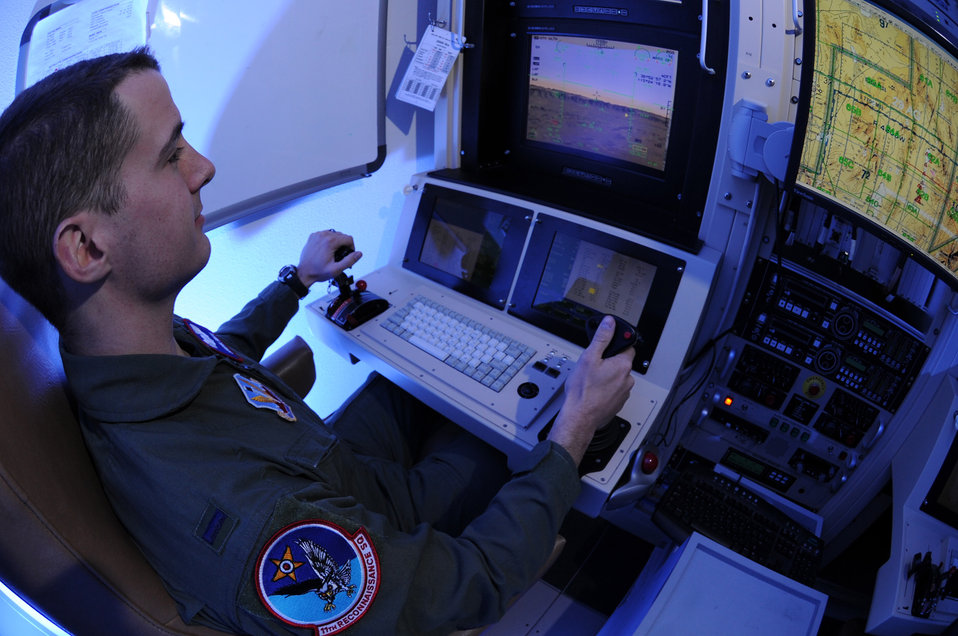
Training for unmanned aircraft systems

1st Lt. Jorden Smith operates an MQ-1 Predator during a training mission April 22 at Creech Air Force Base, Nev. Lieutenant Smith is a Predator pilot with the 11th Reconnaissance Squadron.